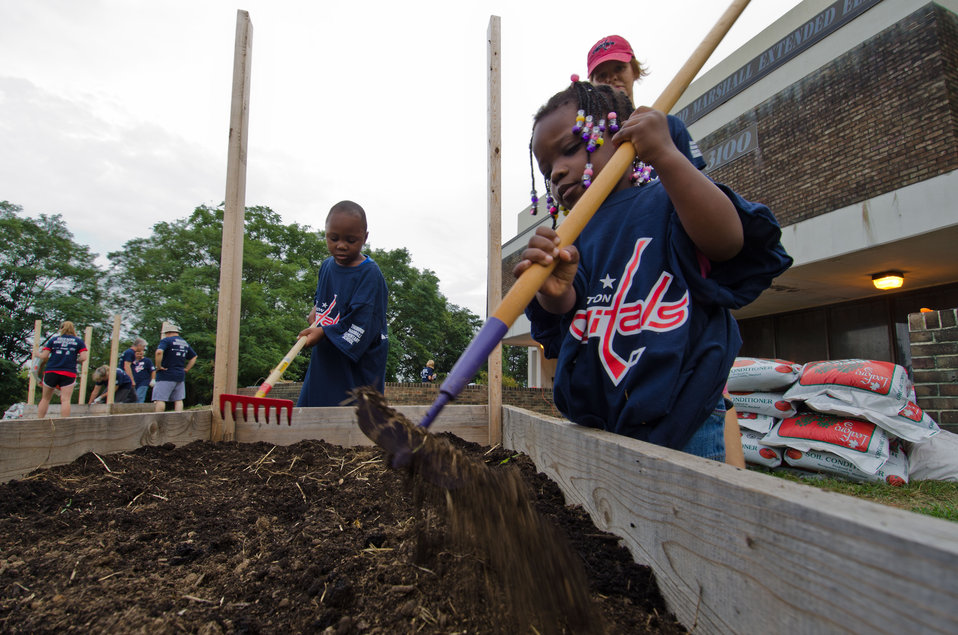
Ellen Anderson guides two young gardeners as thet mix potting and conditioning soil in a raised planter box, when U.S. Department of Agriculture (USDA) People’s Garden Executive Master Gardeners, friends, and family, along with Washington Capitals fans volunteer in the District of Columbia Public Schools’ (DCPS) Beautification Day, on Saturday, August 25, 2012, at Thurgood Marshall Elementary School, in Washington, D.C. Each year people are invited to help “spruce up” public school facilities in preparation for the first day of school. More the 70 volunteers pitched in at this large school facility. The People’s Garden effort involves building and painting raised planter boxes, then preparing the soil mixture so they are “ready to grow.” Additionally, a team that includes descendants of U.S. Supreme Court Justice Thurgood Marshall assembles a prefabricated garden toolshed. The Justice’s son, John Marshall leads the team, which includes Brianna the Justice’s great-grand daughter in one of many multi-generational efforts at this school today. Washington Capitals Forward Mike Riberio, his family and mascot Slapshot participated in every project underway at Marshall School. From the outside gardens, to inside murals, and robotics worktable construction, the teams made their goals.